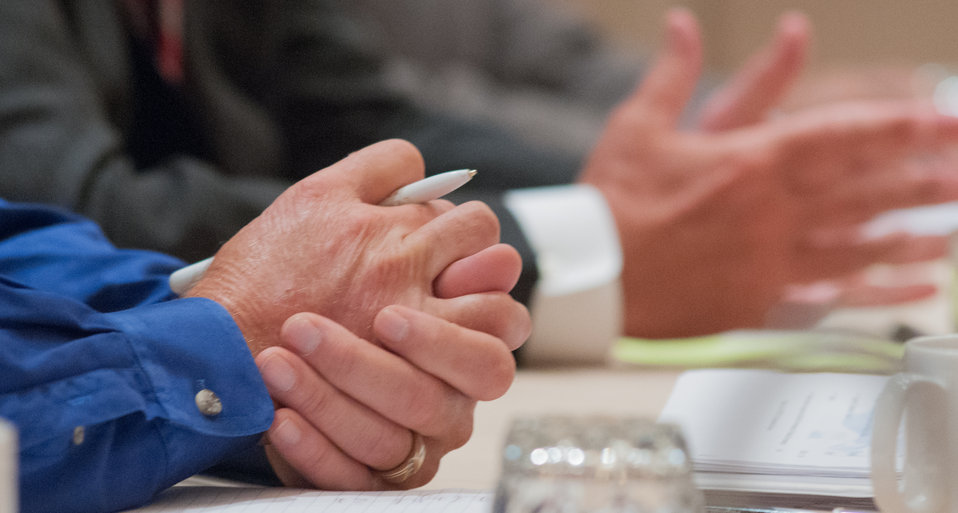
Agriculture Secretary Tom Vilsack, right, at the U.S. Department of Agriculture's (USDA) Council for Native American Farming and Ranching (CNAFR) members, on Monday, Sep. 9, 2013 at the L'Enfant Plaza Hotel, in Washington, D.C. CNAFR was created to advise the Secretary on ways to eliminate barriers to participation for Native American Farmers and Ranchers in USDA programs. The Council was established as part of the Keepseagle settlement, and is conducted under the oversight of USDA's Office of Tribal Relations, which is part of the Office of the Secretary of Agriculture. Also in attendance is The Director of Tribal Relations Leslie Wheelock, Agriculture Assistant Secretary for Civil Rights Joe Leonard, Jr. Ph.D., Farm Services Administration Administrator Juan M. Garcia and Deputy Administrator for Farm Loans Programs Chris Beyerhelm.